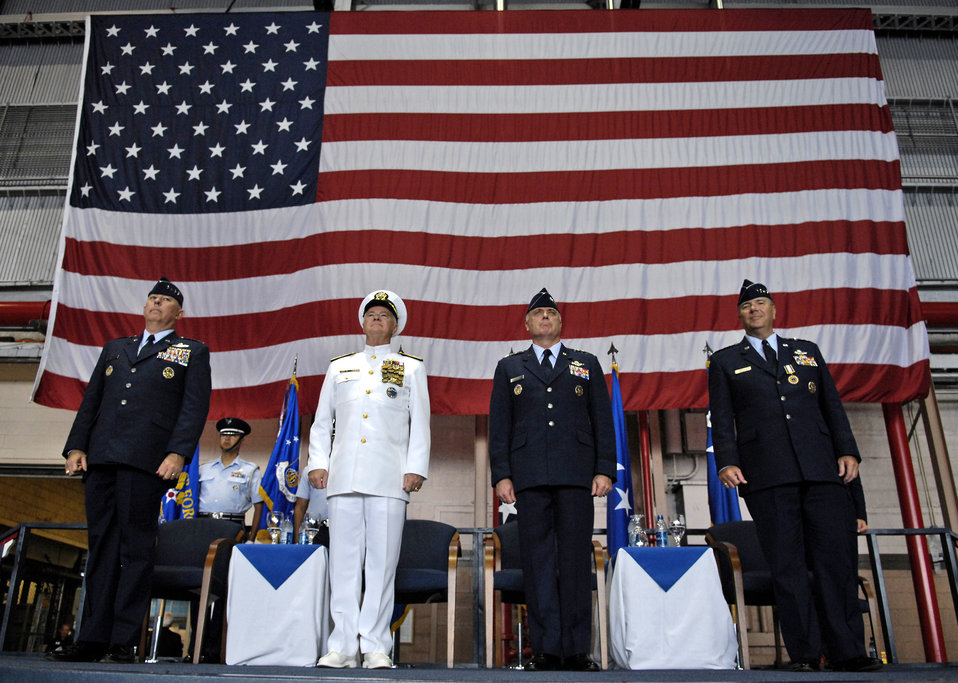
General Chandler takes command

Gen. T. Michael Moseley, Chief of Staff, U.S. Air Force, Adm. Timothy J. Keating, Commander U.S. Pacific Command, Gen. Carrol H. Chandler, in coming Pacific Air Forces commander and Gen. Paul V. Hester, outgoing PACAF commander stand during the Air Force song Nov. 30 during the PACAF change of command ceremony at Hickam Air Force Base, Hawaii. Gen. Moseley and Adm. Keating presided over the change of command. Gen. Chandler assumed command of PACAF during the ceremony.